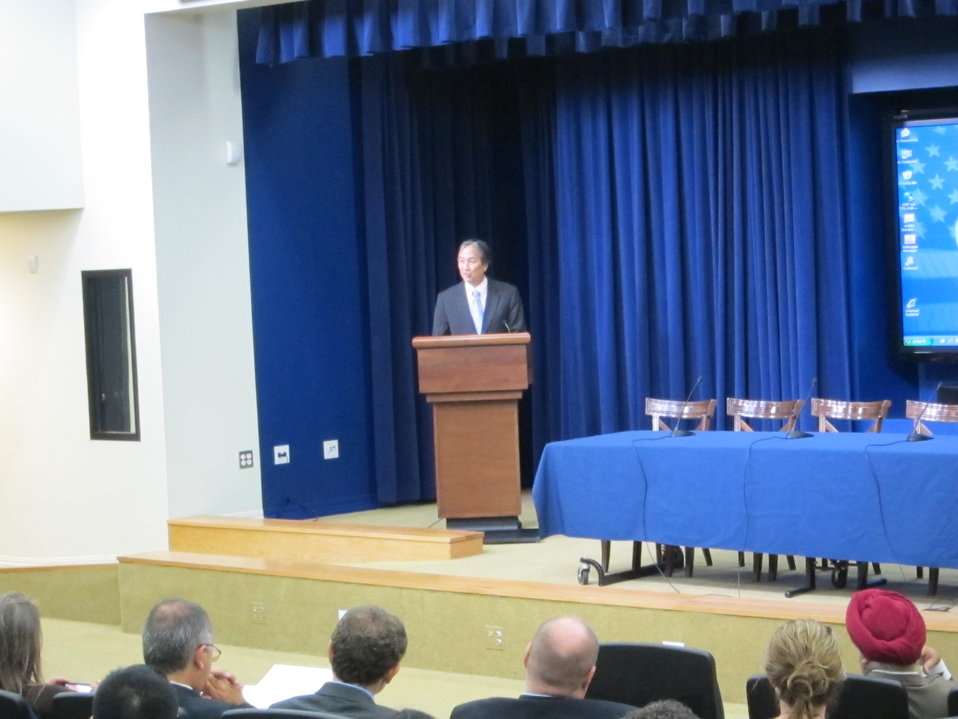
WH 2012 World Hepatitis Day Event